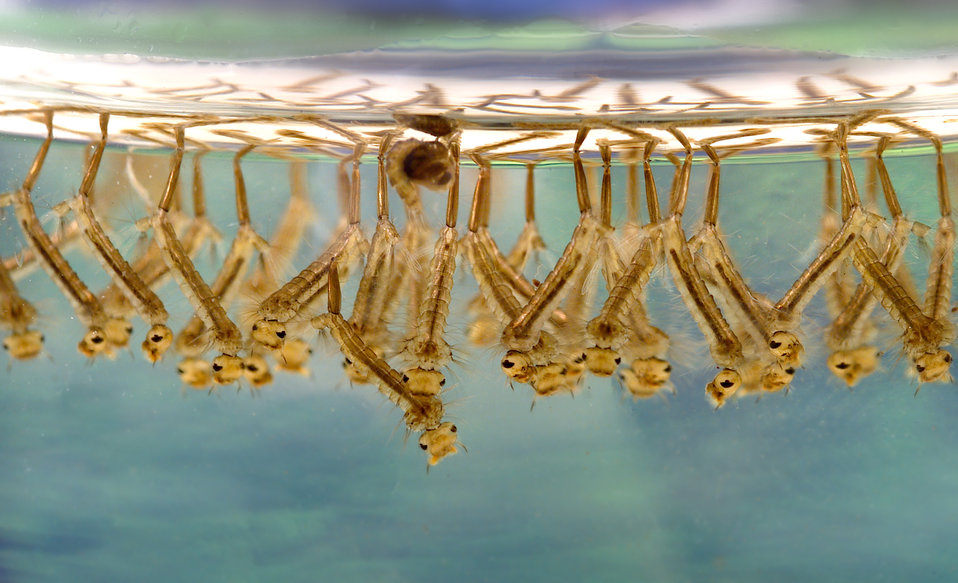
Photo contains Culex larvae found collecting in standing water in an Atlanta, Georgia residential area.